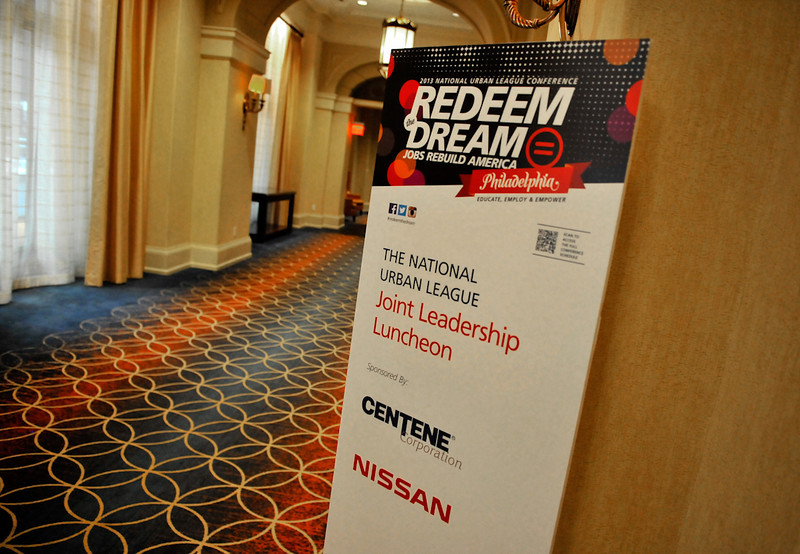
National Urban League Joint Leadership Luncheon 7-24-2013

The National Urban League Joint Leadership Luncheon during the 2013 National Urban League Conference in Philadelphia.